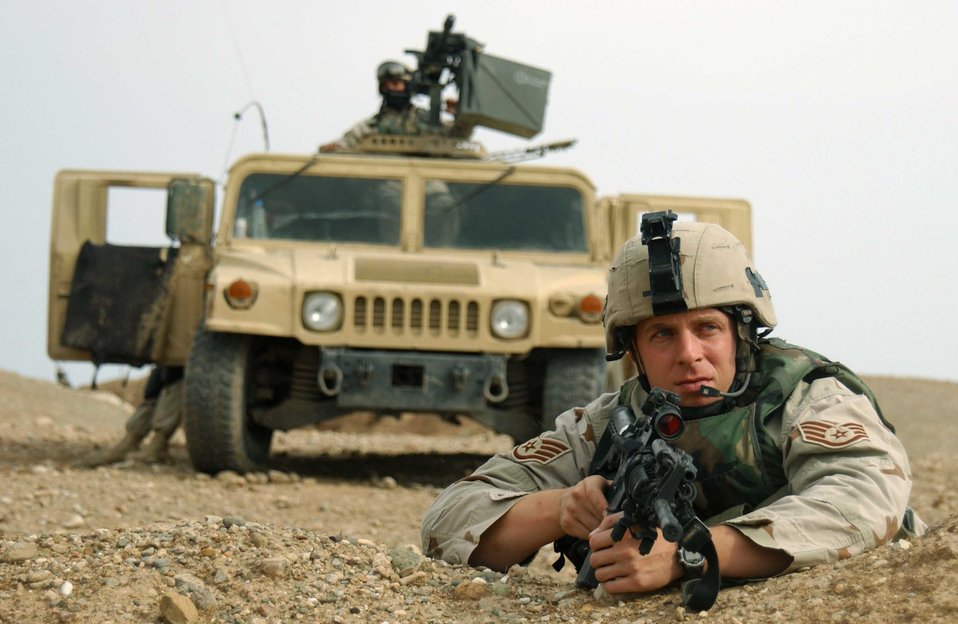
Airmen on patrol

KIRKUK AIR BASE, Iraq -- Staff Sgt. David Howe scans a field for suspicious activity near here Nov. 10. Airmen assigned to the 506th Expeditionary Security Forces Squadron are responsible for securing Air Force assets on Kirkuk Air Base. Sergeant Howe is deployed from the 823rd Security Forces Squadron at Moody Air Force Base, Ga.